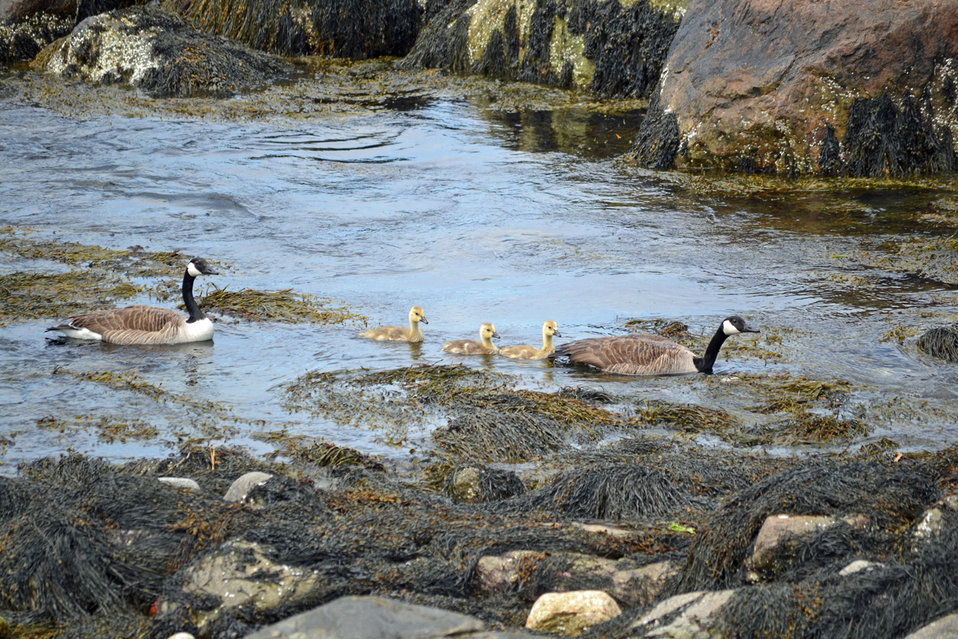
Geese and goslings

Thacher Island National Wildlife Refuge, MA.